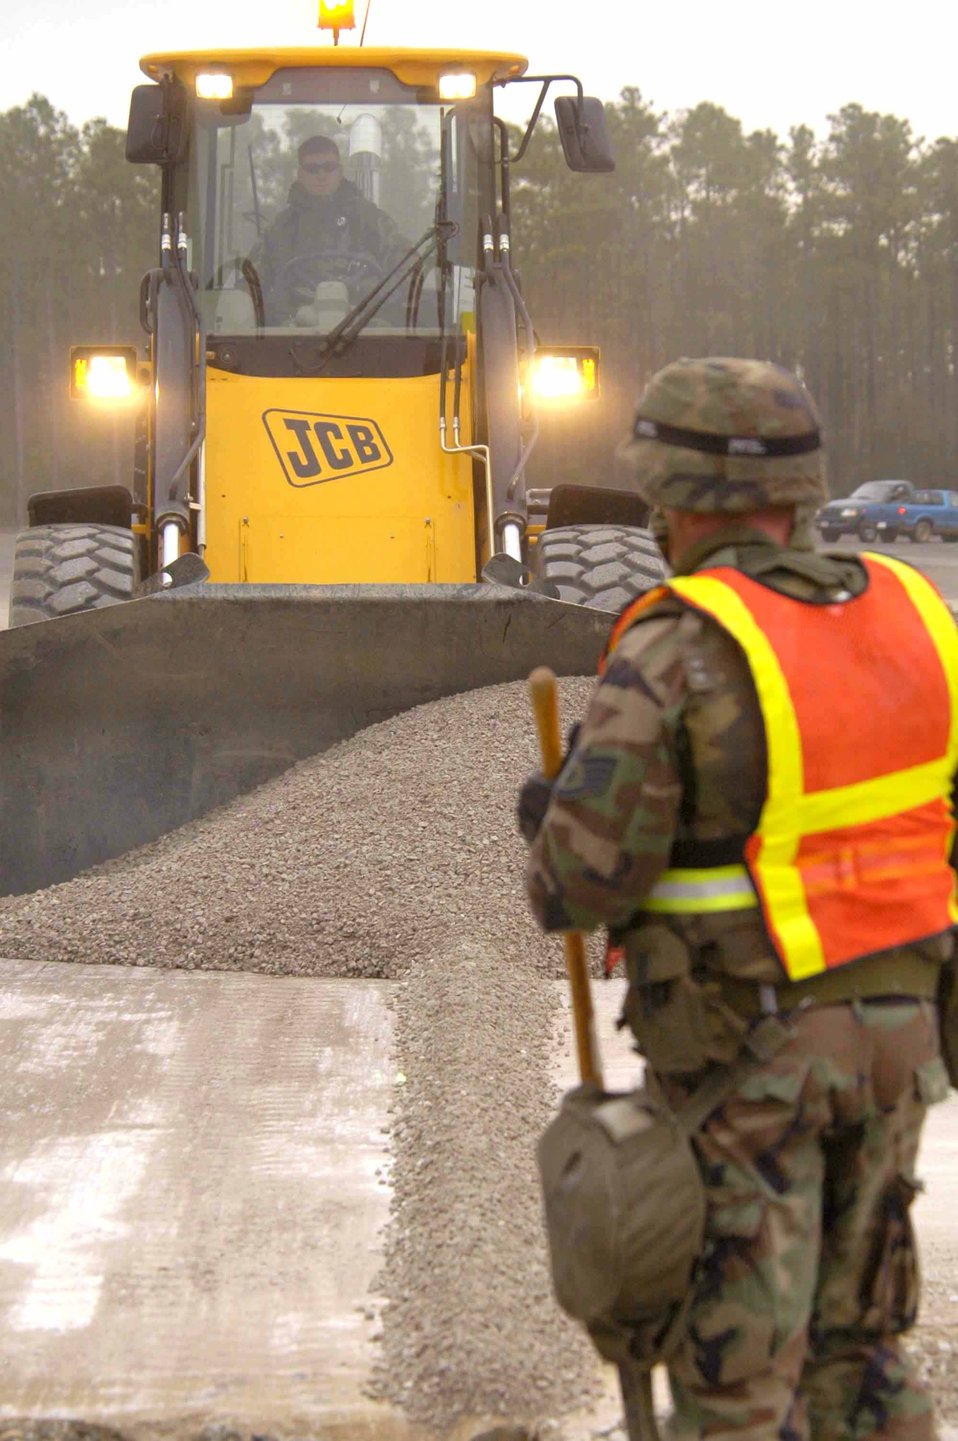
Airmen ready to rapidly repair runways

EGLIN AIR FORCE BASE, Fla. -- Staff Sgt. Charles Cahoon guides a front-end loader as it fills a crater. He is a 796th Civil Engineer Squadron pavement and construction equipment operator.